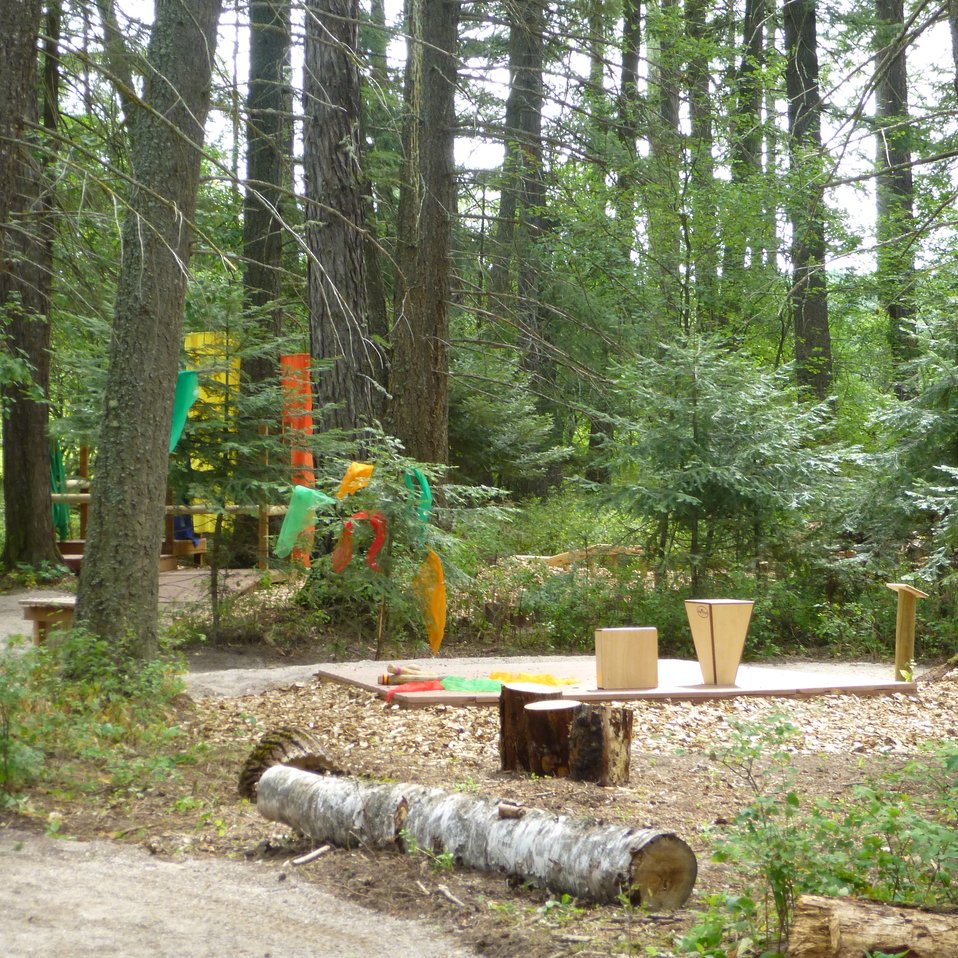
Creston's Nature Explore Outdoor Classroom

This is the Dance and Movement Area with the Climbing and Crawling Platform in background.